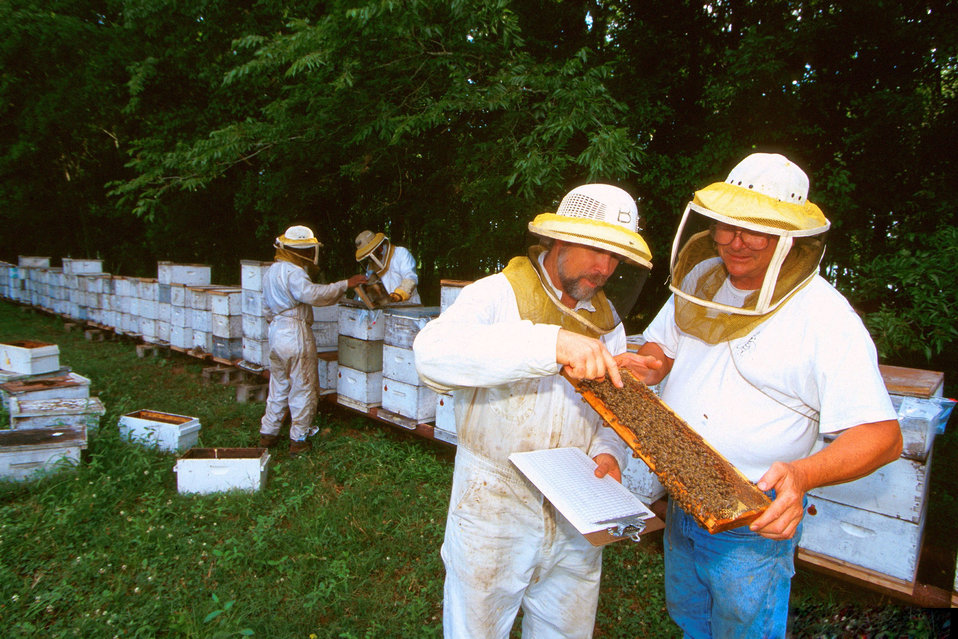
U.S.Department of Agriculture (USDA) Agricultural Research Service (ARS) geneticist Tom Rinderer (right foreground) and beekeeping cooperator Steve Bernard, along with USDA ARS associates Tony Stelzer and Warren Kelley (background, L-R) of the Baton Rouge laboratory, inspect colonies of Russian and other honey bees.